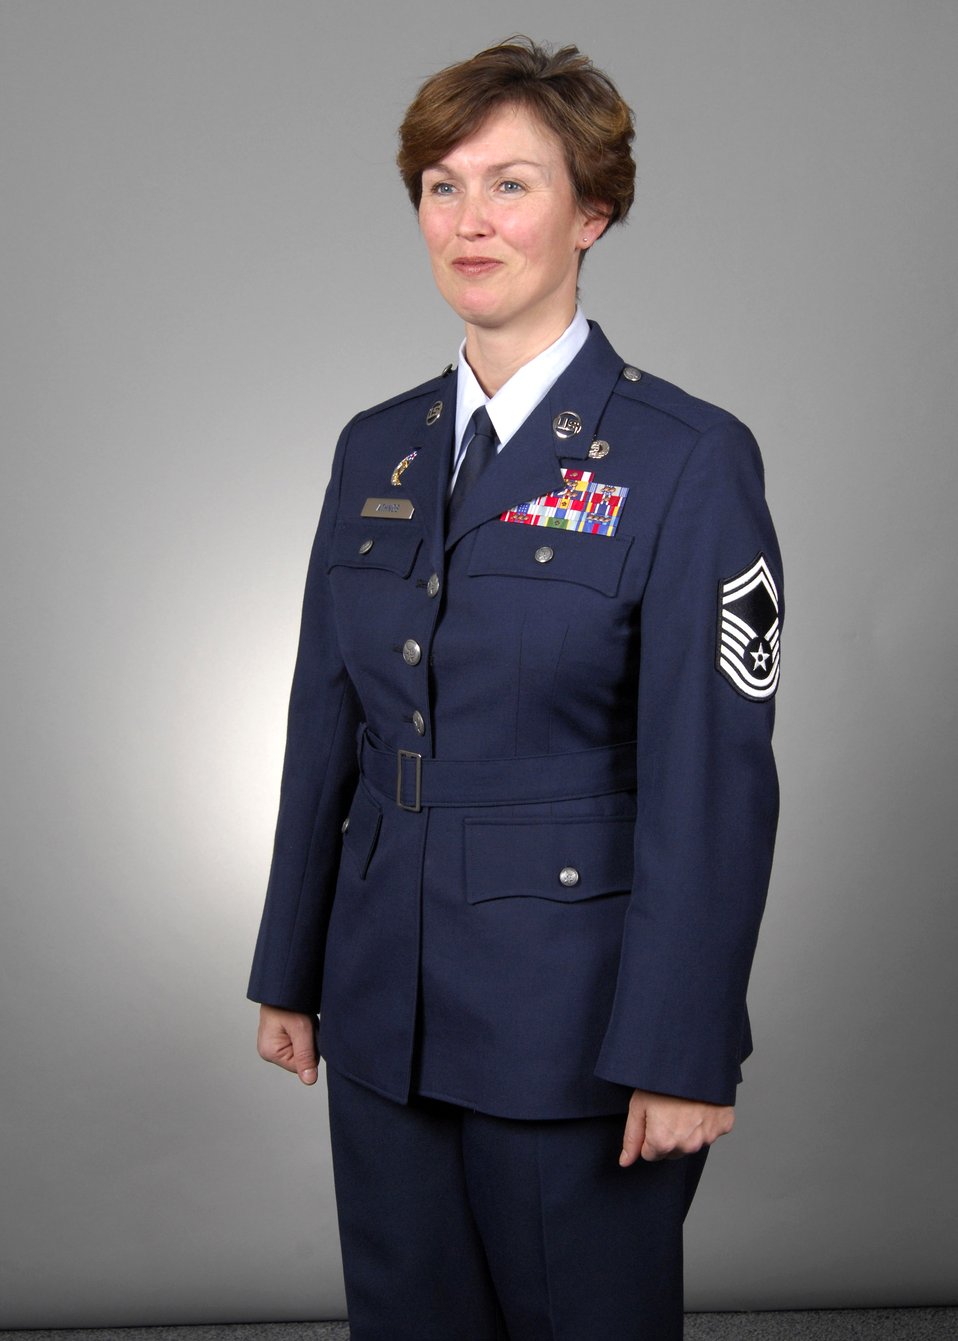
New service coat will better represent Airmen

Senior Master Sgt. Dana Athnos models the new Air Force service dress Heritage Coat, designed on the uniform worn by Gen. Hap Arnold. The Air Force launches a fit test this fall with an actual 90-day wear test in the spring of 2008. According to Air Force leaders, the Heritage Coat will give the service a more military look that reflects the warrior ethos Airmen have today.